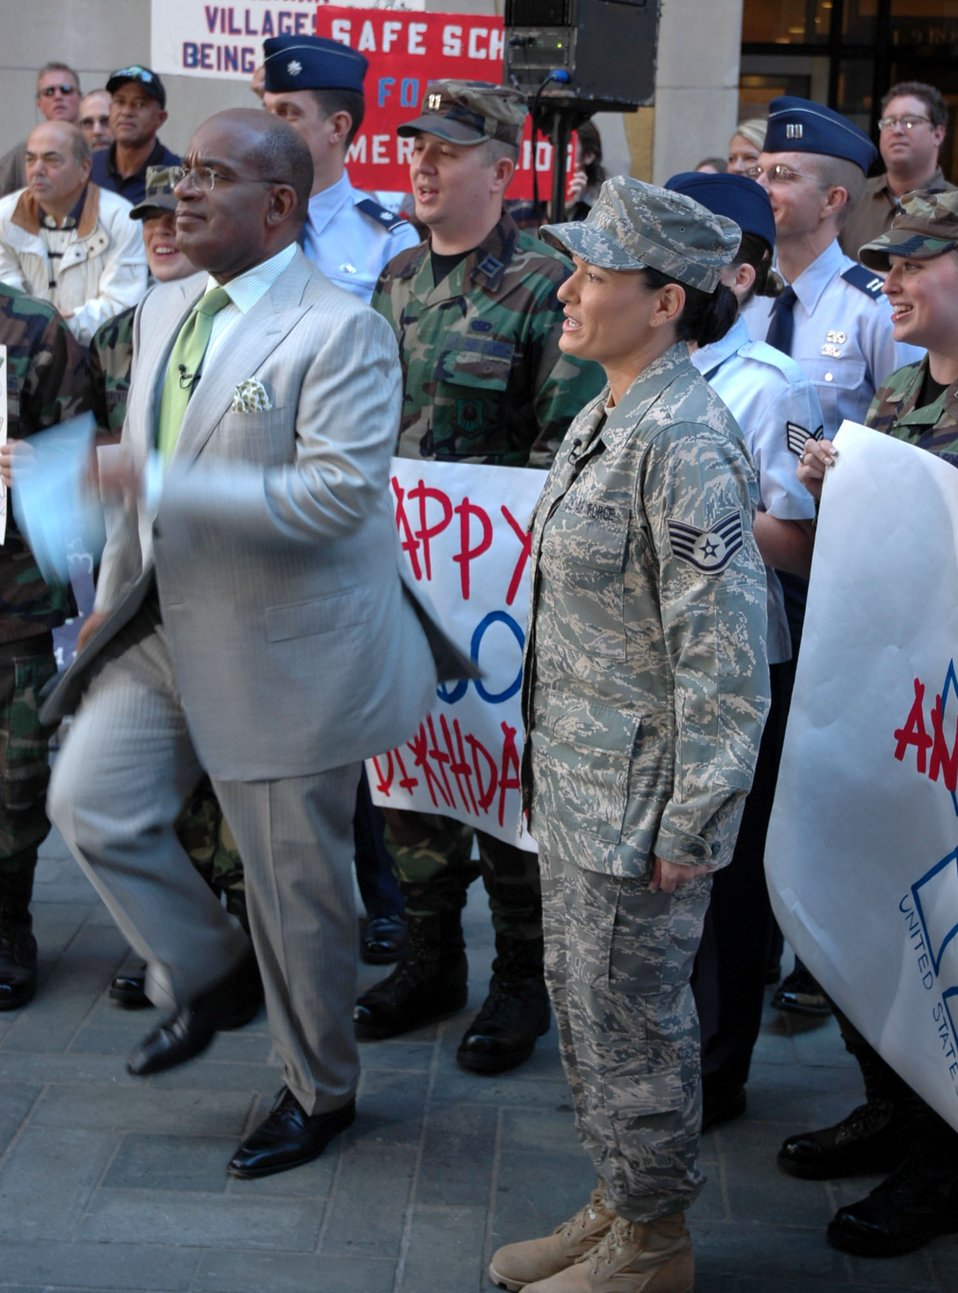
New York City salutes Air Force's birthday